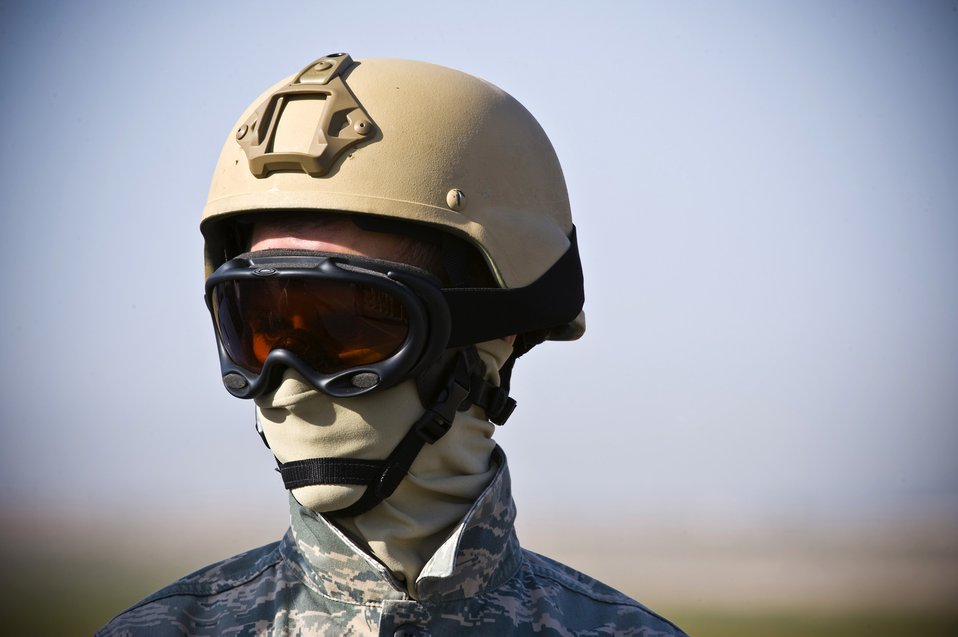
Safety first

Senior Airman Joshua Ramos dons sling-load training equipment to protect himself from debris April 15, 2011, at Nellis Air Force Base, Nev. Airman Ramos is an airborne pavement and equipment craftsman assigned to the 820th RED HORSE Squadron.